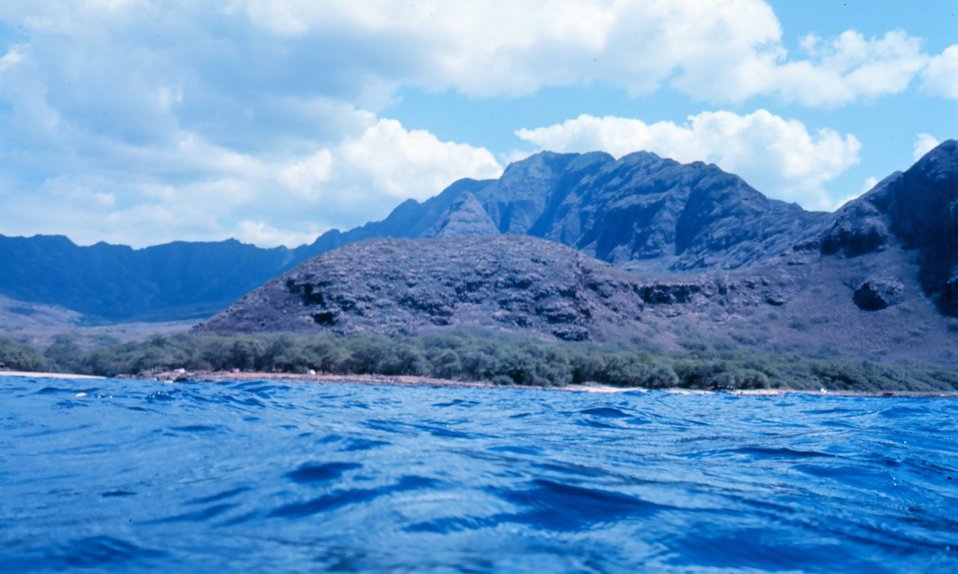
Waianae coast -southwest Oahu